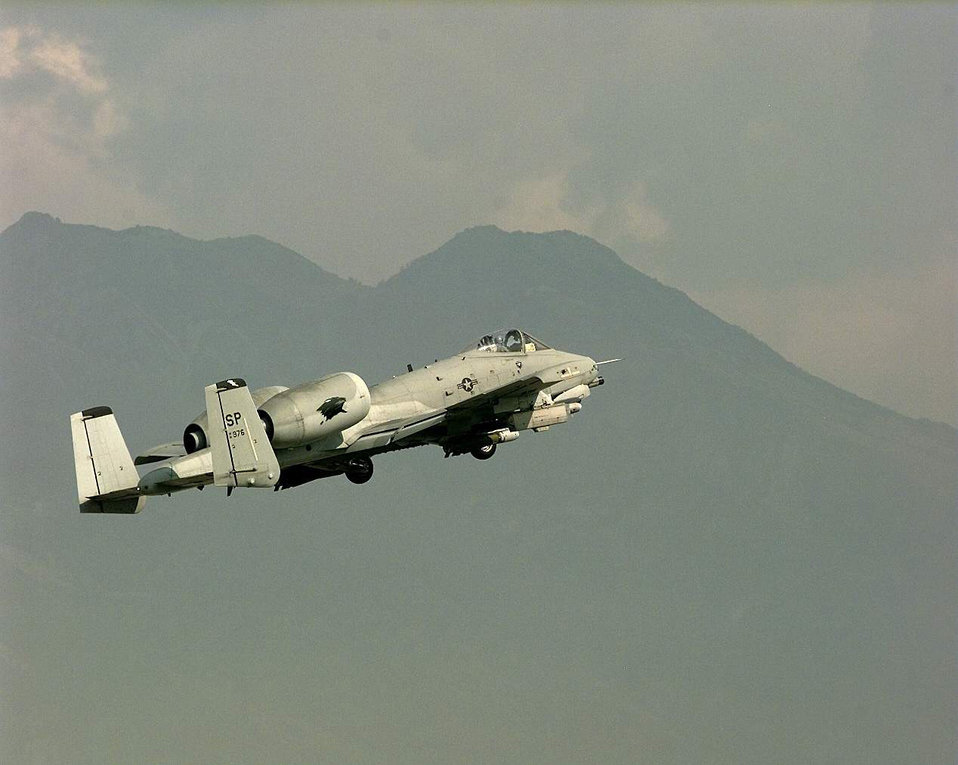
A-10 take off

1990's -- AVIANO AIR BASE, Italy -- An A-10 Thunderbolt II, from the 81st Fighter Squadron, Spangdahlem Air Base, Germany takes-off. A-10s are the first Air Force aircraft specially designed for close air support of ground forces. They are simple, effective and survivable twin-engine jet aircraft that can be used against all ground targets, including tanks and other armored vehicles. They can loiter near battle areas for extended periods of time and operate under 1,000-foot ceilings with 1.5-mile visibility. Their wide combat radius and short takeoff and landing capability permit operations in and out of locations near front lines. Using night vision goggles pilots can conduct their missions during darkness.